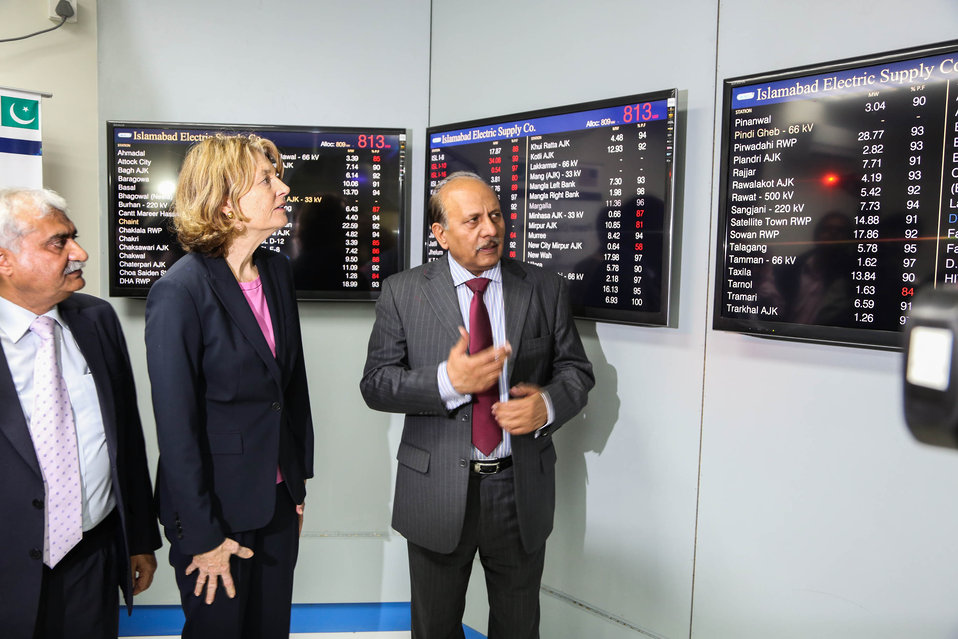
U.S. Improves IESCO’s ability to Reduce Unscheduled Load Shedding